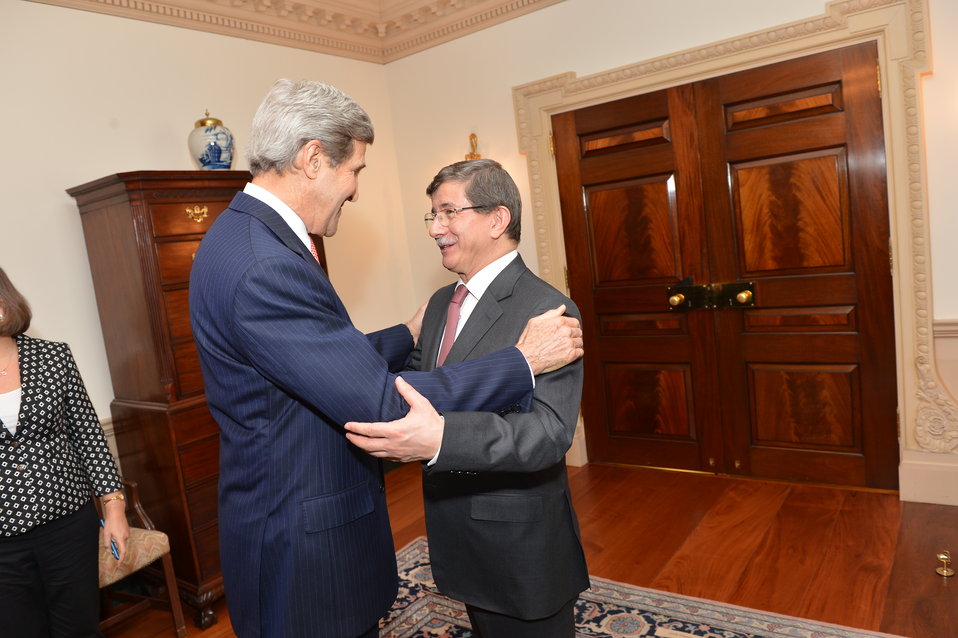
Secretary Kerry Greets Turkish Foreign Minister Davutoglu

U.S. Secretary of State John Kerry greets Turkish Foreign Minister Ahmet Davutoglu before their bilateral meeting at the U.S. Department of State in Washington, D.C., on November 18, 2013.